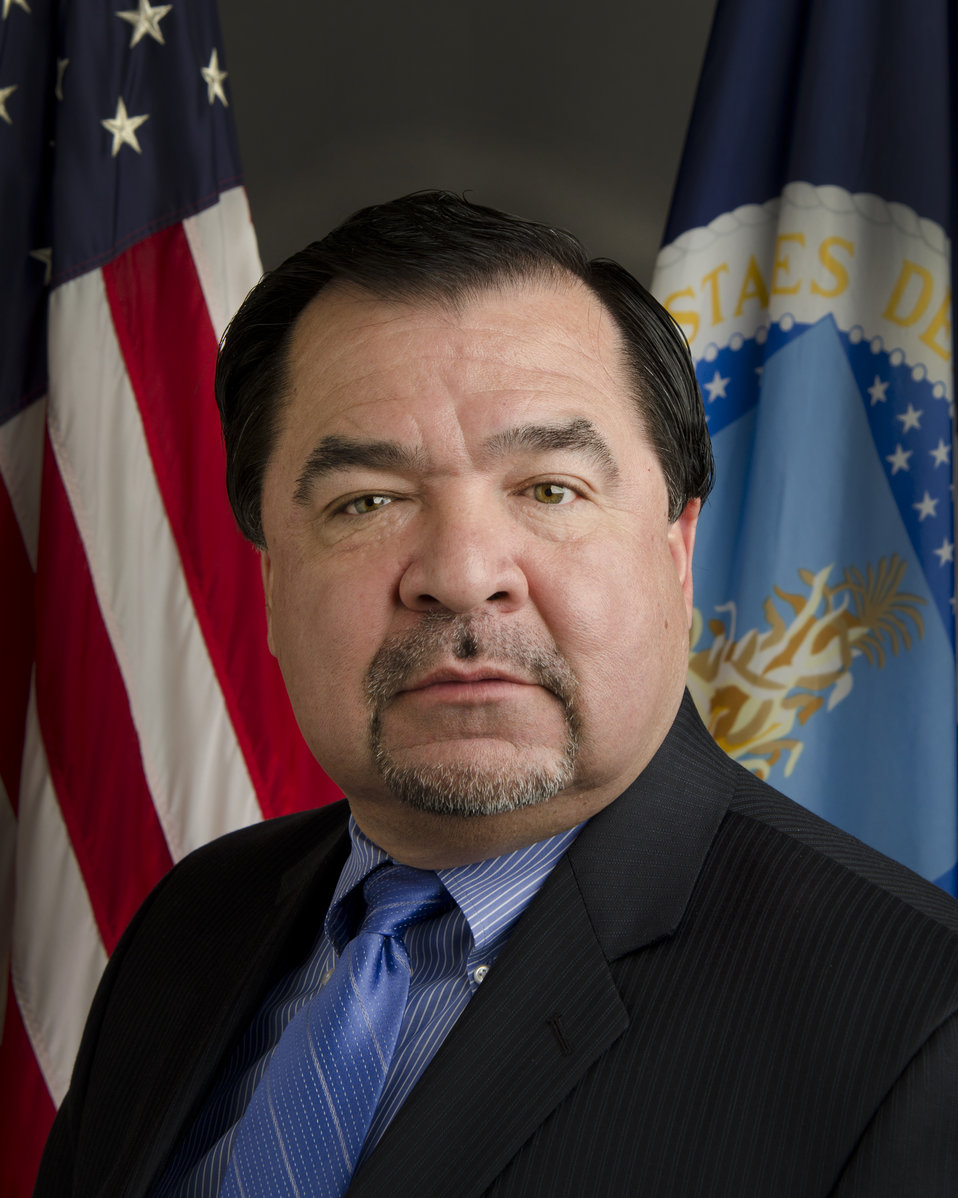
20130905-FSIS-KJH-3465 Administrator, Food Safety and Inspection Service (FSIS), Alfred V. Almanza

Alfred V. Almanza, Administrator, FSIS, portrait.